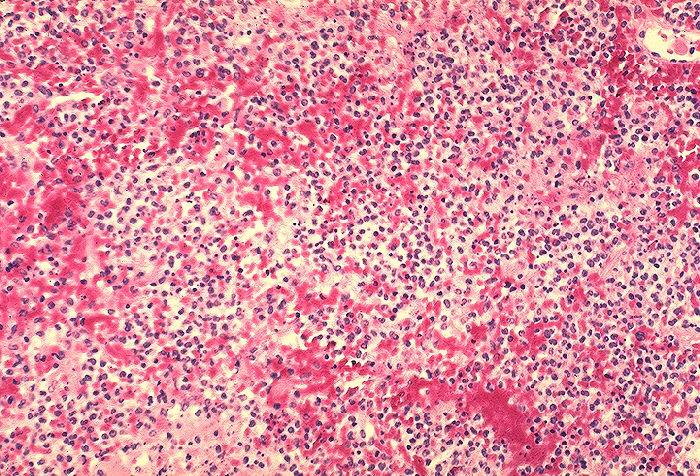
Histopathology of lung in fatal human plague.